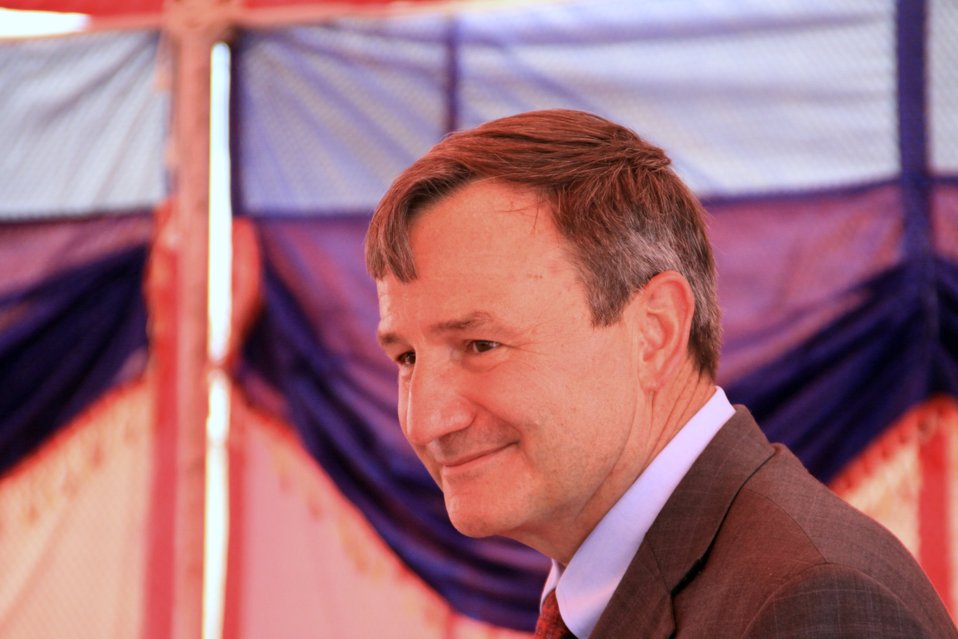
Badam Bagh Farm